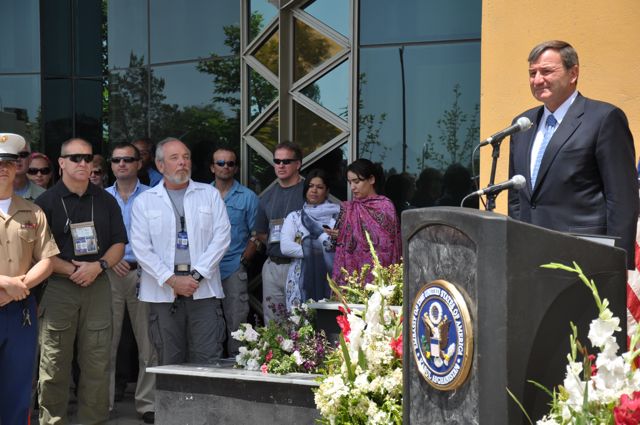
Memorial Day at US Embassy in Kabul